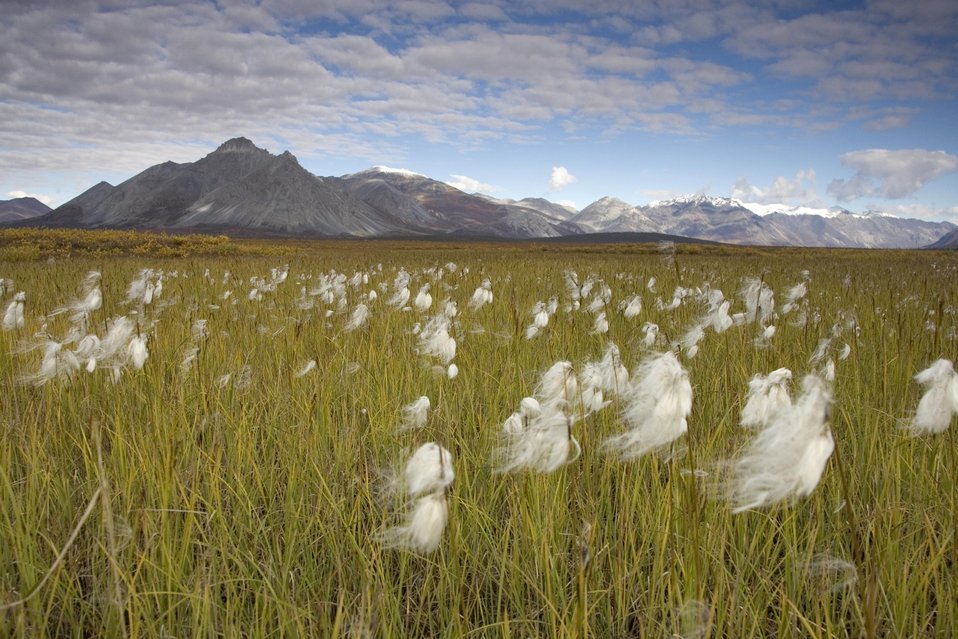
Arctic National Wildlife Refuge